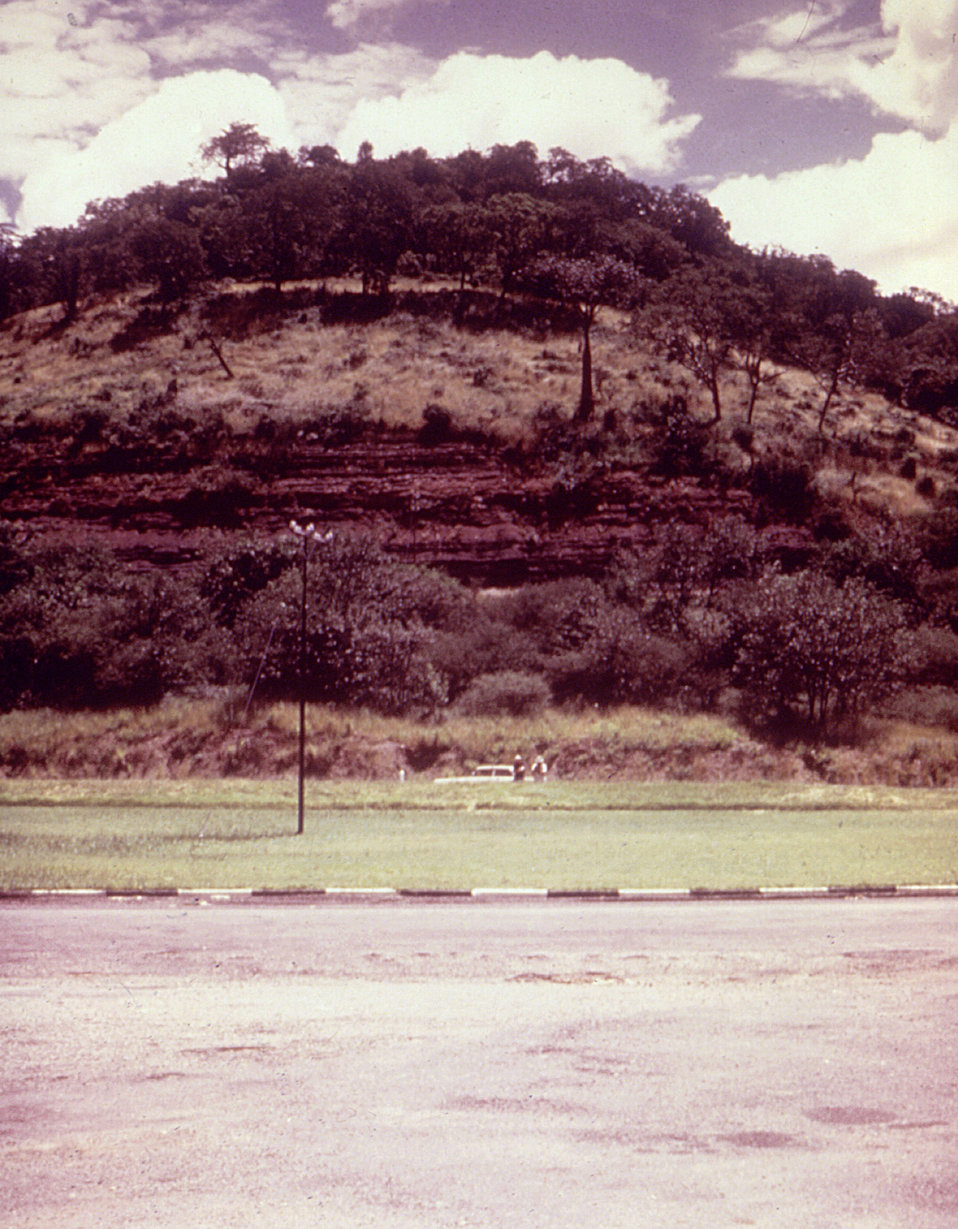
This Wankie, Rhodesia (now Zimbabwe) roadside location photograph was taken during a Marburg virus investigation in 1975.